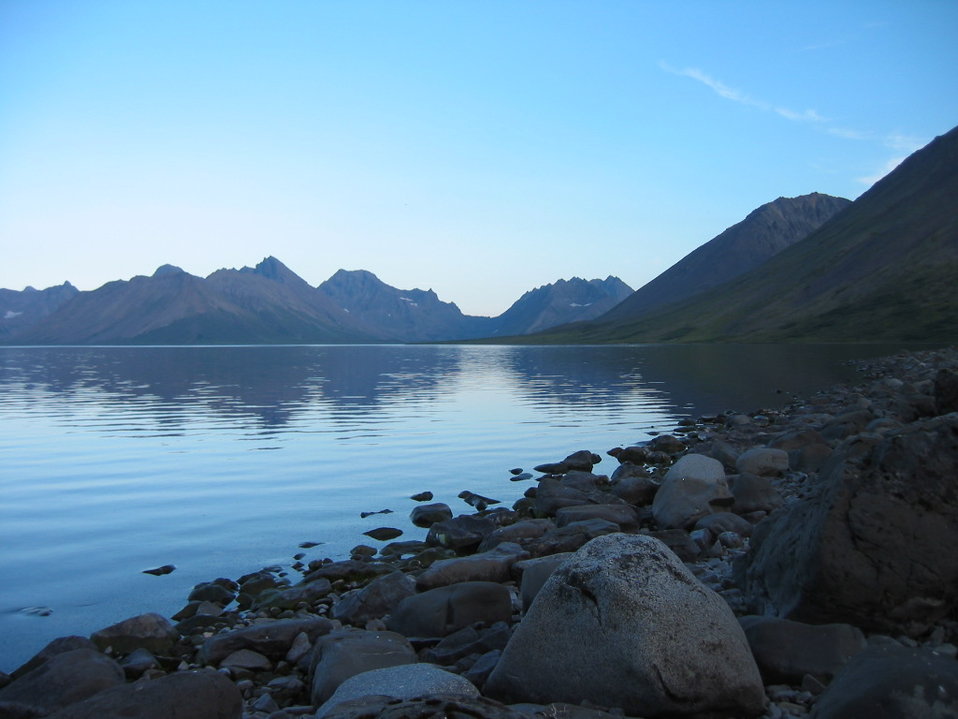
Kwethluk River

USFWS Yukon Delta NWR